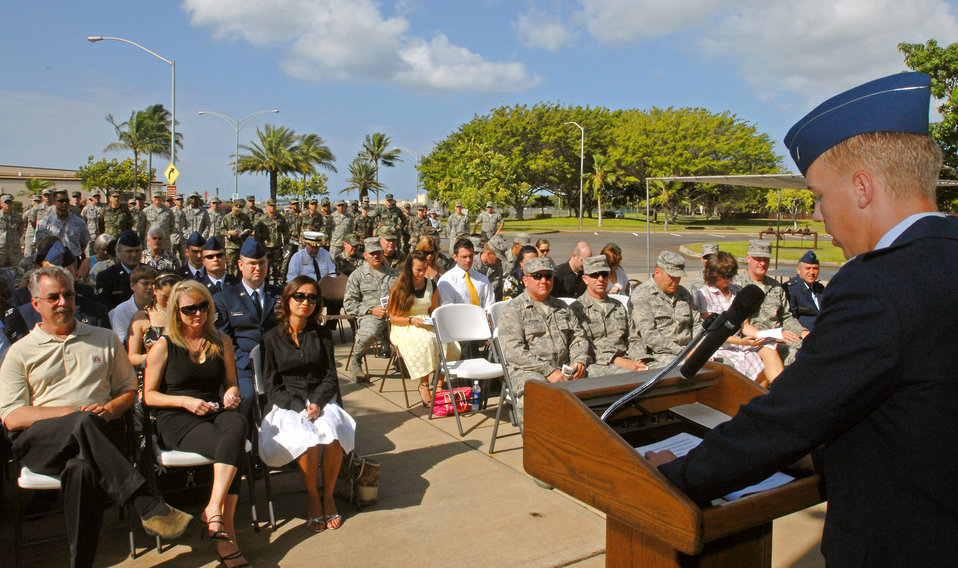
EOD facility at Hickam named in honor of fallen Airman

1st Lt. Edward Porter addresses family, friends and fellow servicemembers during the dedication ceremony for Senior Airman William Newman June 7 at Hickam Air Force Base, Hawaii. Airman Newman was assigned to a three-man team clearing improvised explosives devices when he lost his life June 7, 2007. Lieutenant Porter is assigned to the 15th Civil Engineer Squadron.